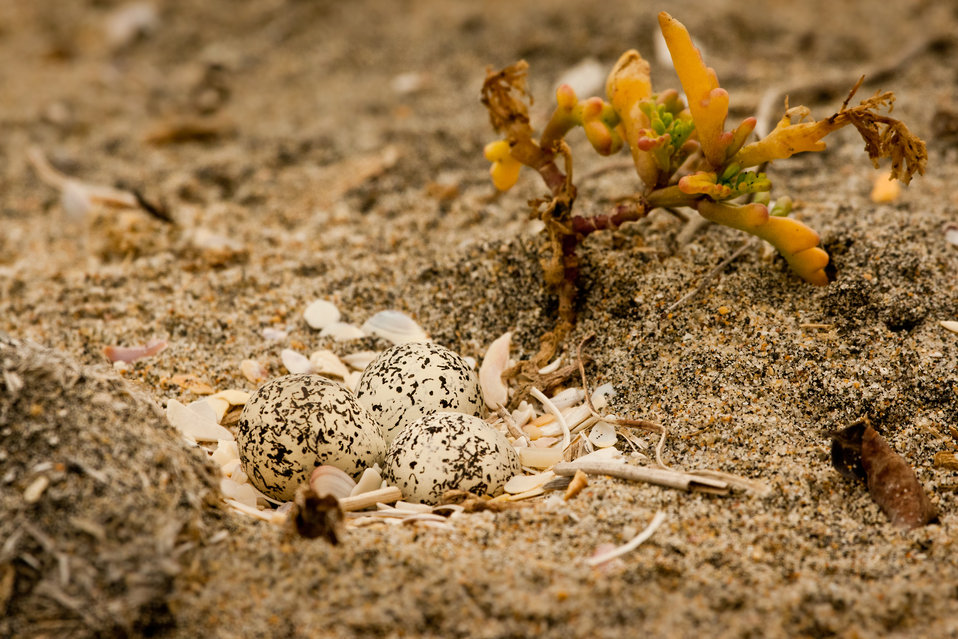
Snuggled eggs

A clutch of 3 Western snowy plover eggs. The silver beach burr plant seems to be providing some sort of protection for it, perhaps the reason why the female chose this nest site.